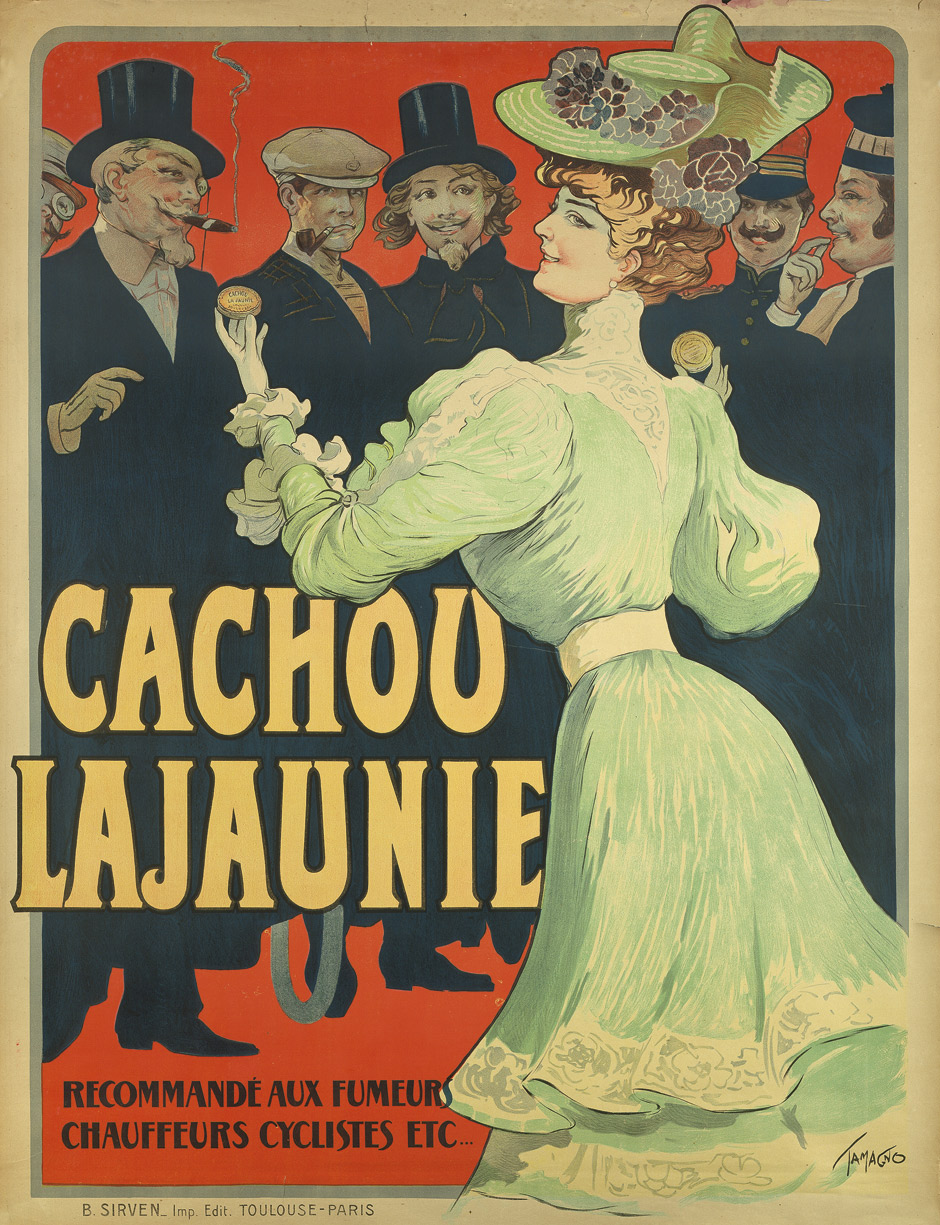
Cachou Lajaunie. Recommandé aux Fumeurs Chauffeurs Cyclistes etc. Großplakat, Farblithographie. 129,5 x 100 cm. Toulouse und Paris, B. Sirven, um 1890.